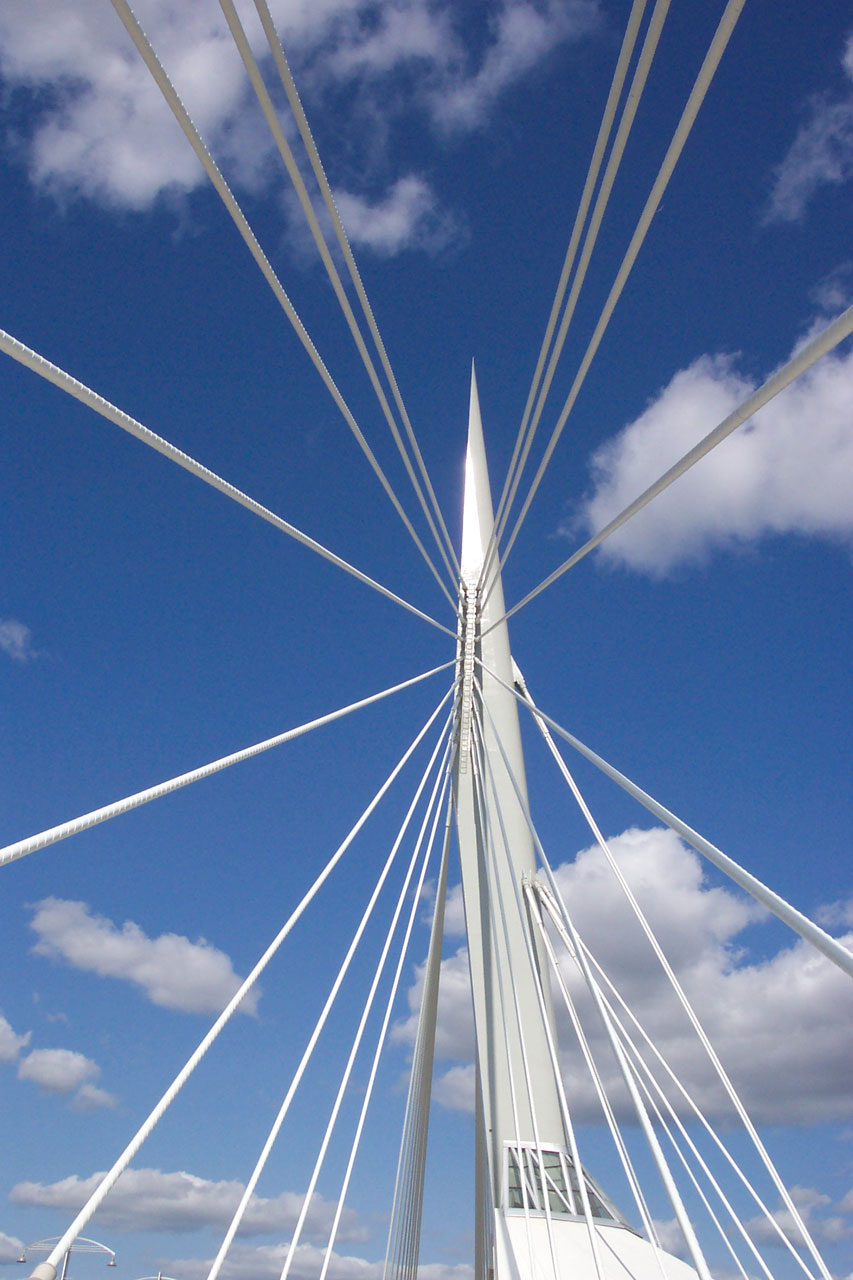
Bridge structure in winnipeg manitoba canada.